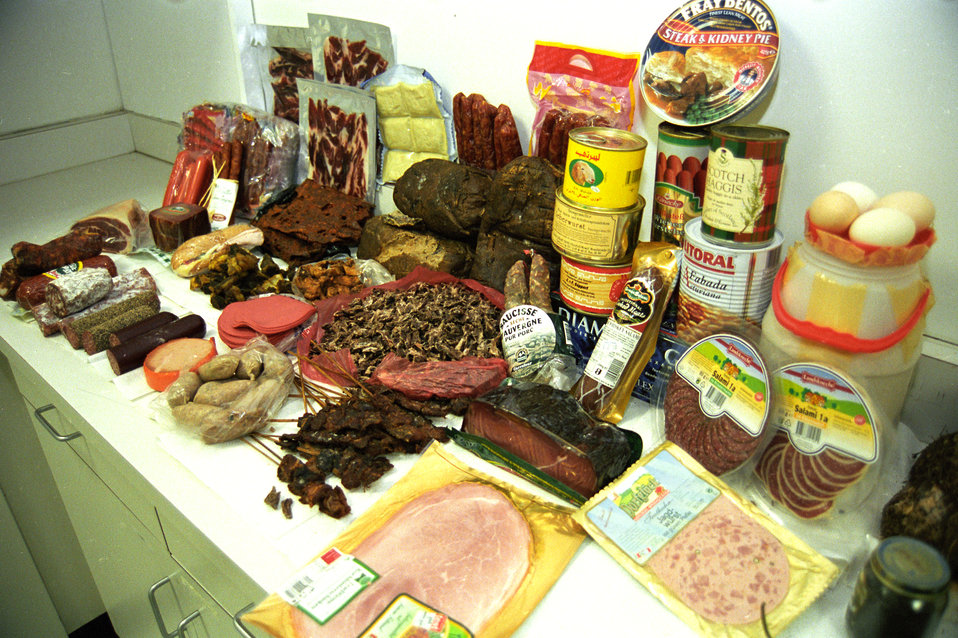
Food contraband intercepted at Washington Dulles International Airport in Chantilly, VA on March 14, 2001 is held for disposal at the airport. The food was concealed in passengers ‘luggage and located by a beagle from the Beagle Brigade. The Brigade is a team of beagles and their human handlers who, as part of the U.S. Department of Agriculture's (USDA) Animal and Plant Health Inspection Service (APHIS) inspect luggage at U.S. airports searching for agricultural products. The Beagle Brigade program averages around 75,000 seizures of prohibited agricultural products a year. Unauthorized meat, animal byproducts, fruit and vegetables can carry diseases and pests that have the potential to infect U.S. agriculture. APHIS works in conjunction with the U.S. Customs and Border Protection and the U.S. Public Health Service at entry points to the U.S., including land borders, ports and airports. The Beagle Brigade generally works in the baggage-claim area at international airports. After 911, the Beagle Brigade is under the authority of Homeland Security.